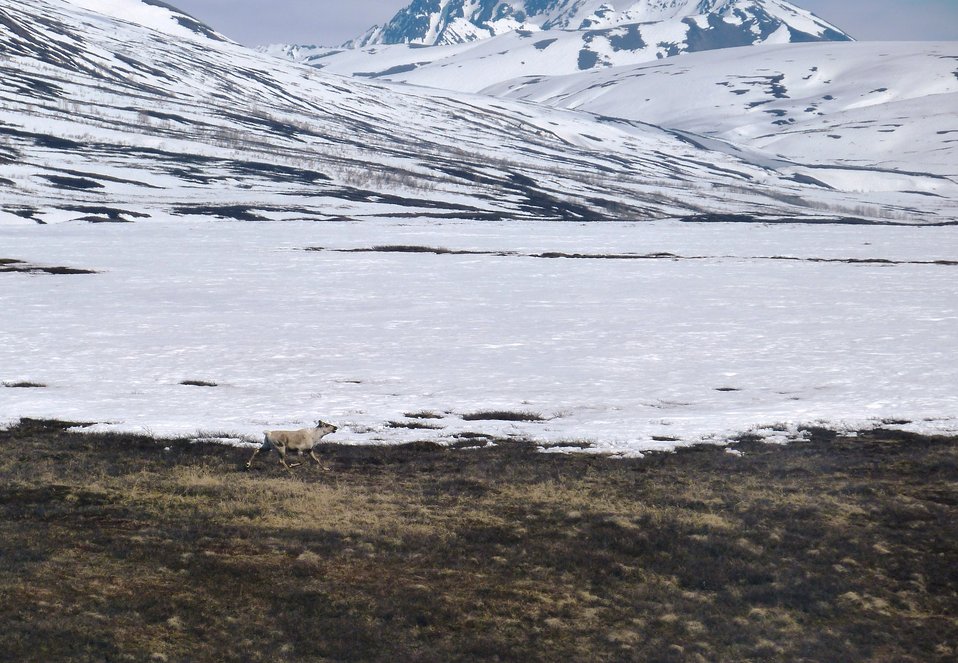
Caribou in Kilbuck Mountains on Yukon Delta National Wildlife Refuge

Photo credit: Kristine Sowl
USFWS, Yukon Delta National Wildlife Refuge